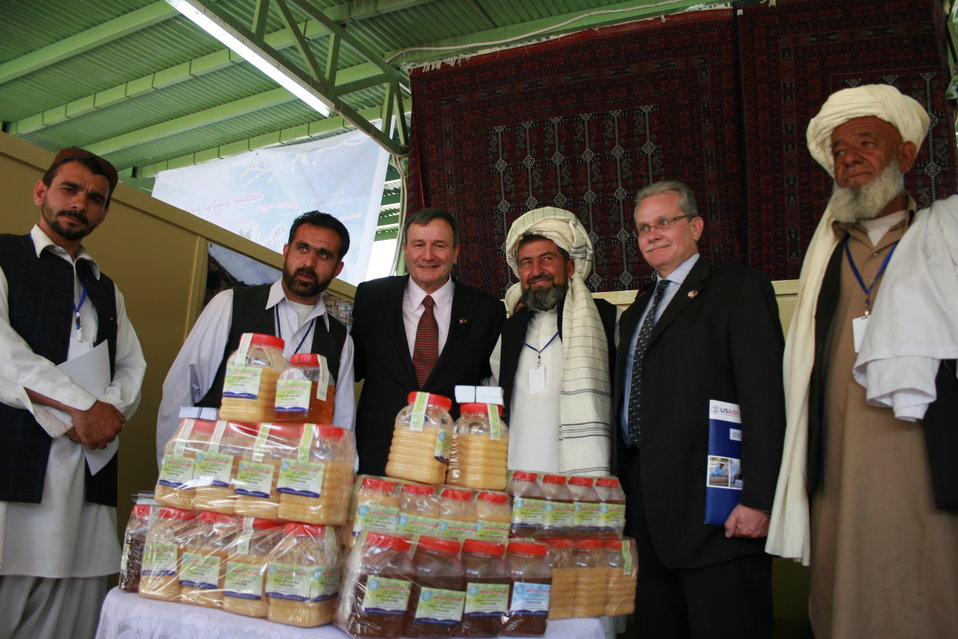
AgFair Paktia Beekeepers Association

On May 20, 2009, Ambassador Eikenberry joined government officials, farmers, agribusiness representatives, and international investors at the launch of the Kabul International AgFair on May 20. Held at the Ministry of Agriculture, Irrigation and Livestock’s Badam Bagh Demonstration Farm in Kabul, the fair showcases Afghanistan’s wealth of fresh produce, provides lucrative business opportunities, and demonstrates innovative agricultural technologies. It is expected to attract more than 50,000 participants from May 21-22.

U.S. Ambassador Karl Eikenberry and Afghan Acting Minister of Agriculture, Irrigation and Livestock (MAIL) Saleem Kunduzi gave opening remarks at the AgFair’s launch. “The United States Government is co-sponsoring national and regional AgFairs like this one to encourage trade and generate business opportunities in the agriculture sector,” Ambassador Eikenberry said. “In a country that is 80 percent rural, promoting licit crops and agriculture sector job creation are two essential steps to successful development in the region.”

Member of Parliament Abdul Salam Qazizada offered bold remarks, stating that we need to engage more with farmers in every province throughout the country.

Following the ceremony, Ambassador Eikenberry visited a number of vendors at the fair with Acting Minister Kunduzi and Mr. Qazizada. In speaking with farmers displaying their produce, Ambassador Eikenberry found that many have increased yields due to USAID assistance, have found regional buyers for their produce, and were grateful for the opportunities that AgFair provides.

Ambassador Eikenberry also discussed the state of agriculture with Minister Kunduzi and Mr. Qazizada. They agreed that while some progress has been made, there is a great deal more work to be done. Ambassador Eikenberry reiterated from his speech that USDA Secretary Vilsack recently met with Minister Rahimi to discuss the U.S. commitment to agriculture development. In a message to the Afghan public, Secretary Vilsack stressed that the USG aims to play a leading role by bringing more agriculture experts to the provinces and supporting agriculture research such as the Badam Bagh Demonstration Farm. Additionally, he looks “forward to working together to increase agricultural productivity, which will result in more jobs throughout the entire value chain, and a better quality of life for the citizens of Afghanistan.”

The United States Government is proud to support Afghan agriculture. Since 2002, America has provided more than 1 billion dollars in assistance to agriculture and rural development. AgFairs like the one Ambassador Eikenberry visited creates awareness of Afghanistan’s expanding agricultural sector, promotes new agricultural technologies that increase productivity, and provides a forum to connect farmers to local and international buyers. These results will contribute to Afghanistan’s prosperity.

We are already seeing the results of these fairs. Since 2007, Afghanistan’s agricultural fairs have attracted more than 500,000 participants from across the nation and the world, generated millions of dollars in sales of the country’s high-value produce, and provided participants with a competitive edge in one of the fastest growing markets in Central Asia.

As Ambassador Eikenberry stated, “The word is out – with over 180 international businesses represented at this fair, it is obvious that Afghanistan has sparked the interest, and appetite, of the world.”